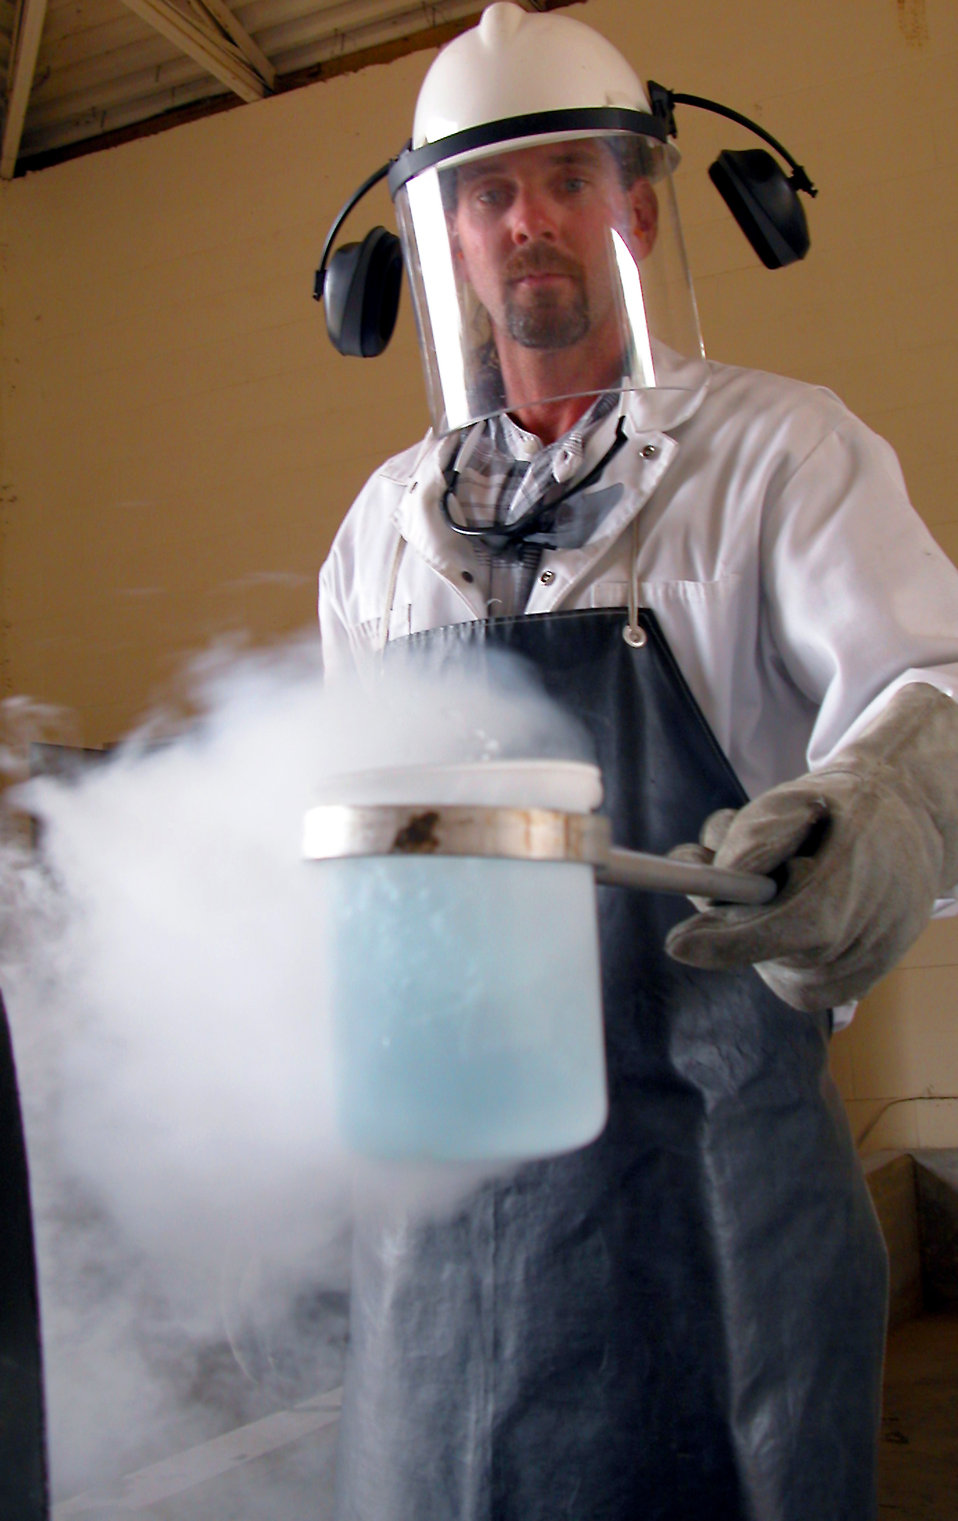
Keeping it cool

ROBINS AIR FORCE BASE, Ga. -- Billy Arnett collects a sample of liquid oxygen to test for odor and contamination. Arnett is a fuels specialist with the 78th Logistics Readiness Squadron's LOX station here.